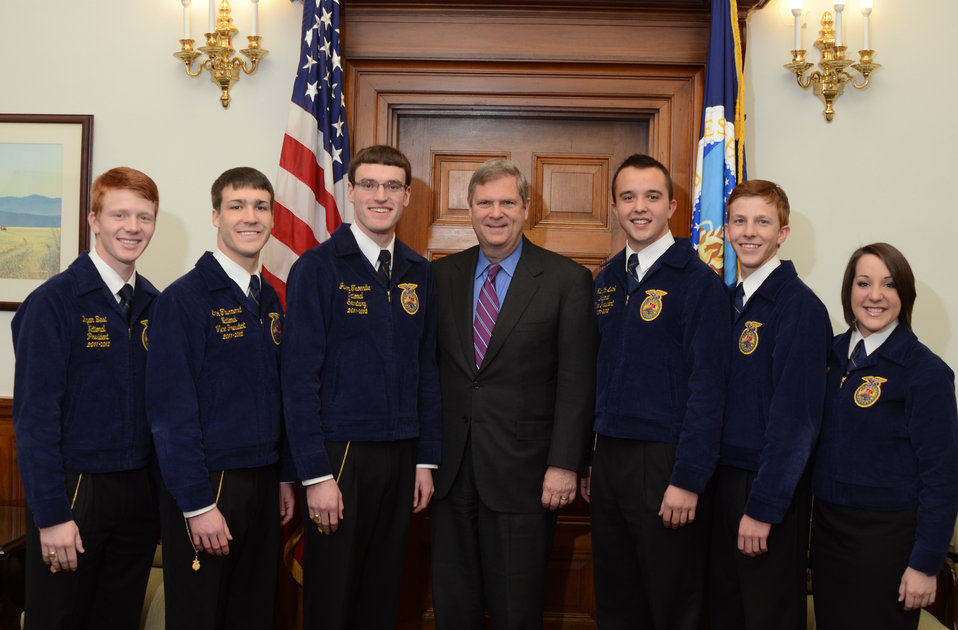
Left to right National FFA President Ryan W. Best, National FFA Vice President Southern Region Cain Thurmond, National FFA Secretary Jason Troendle, Agriculture Secretary Tom Vilsack,
National FFA Eastern Region Vice President Kenneth D. Quick, National FFA Vice President Western Region Seth Pratt and National FFA Central Region Vice President Alicia Hodnik at the U.S. Department of Agriculture in Washington, D.C., on Friday, January 20, 2012.